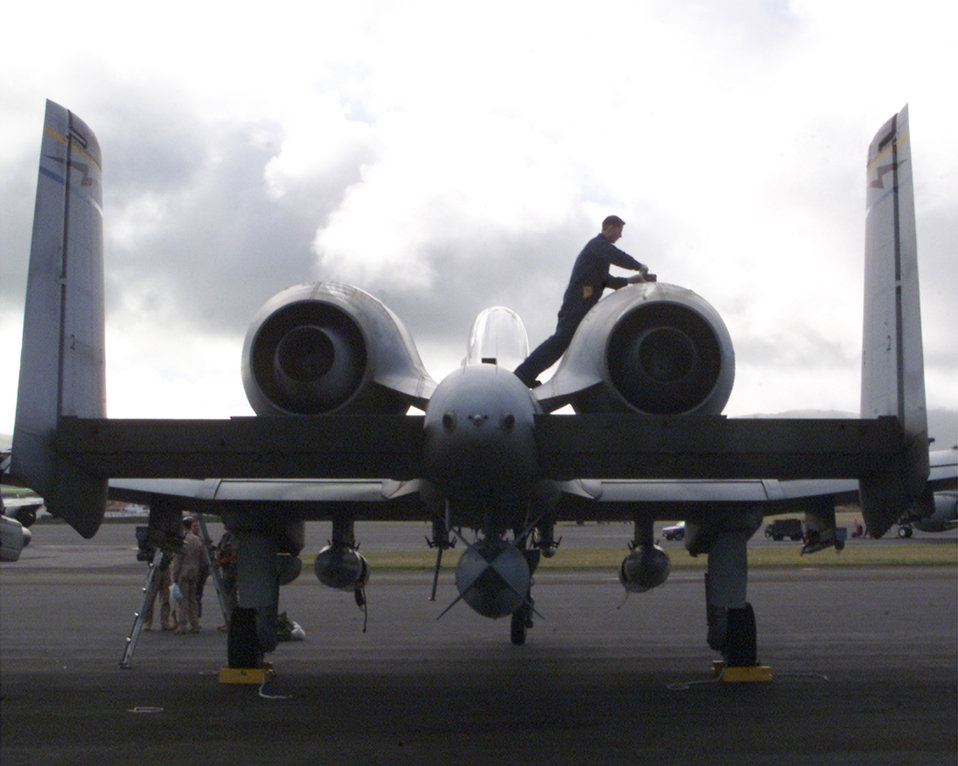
Post-flight inspection

1990's -- OPERATION SOUTHERN WATCH -- Senior Airman Eric Garcia, an A-10 Thunderbolt II crew chief from the 65th Operations Support Squadron at Lajes Field, Azores, Portugal, completes a post-flight inspection of an A-10A aircraft in support of Operation Southern Watch. The A-10 is the first Air Force aircraft specially designed for close air support of ground forces. It can be used against all ground targets, including tanks and other armored vehicles.